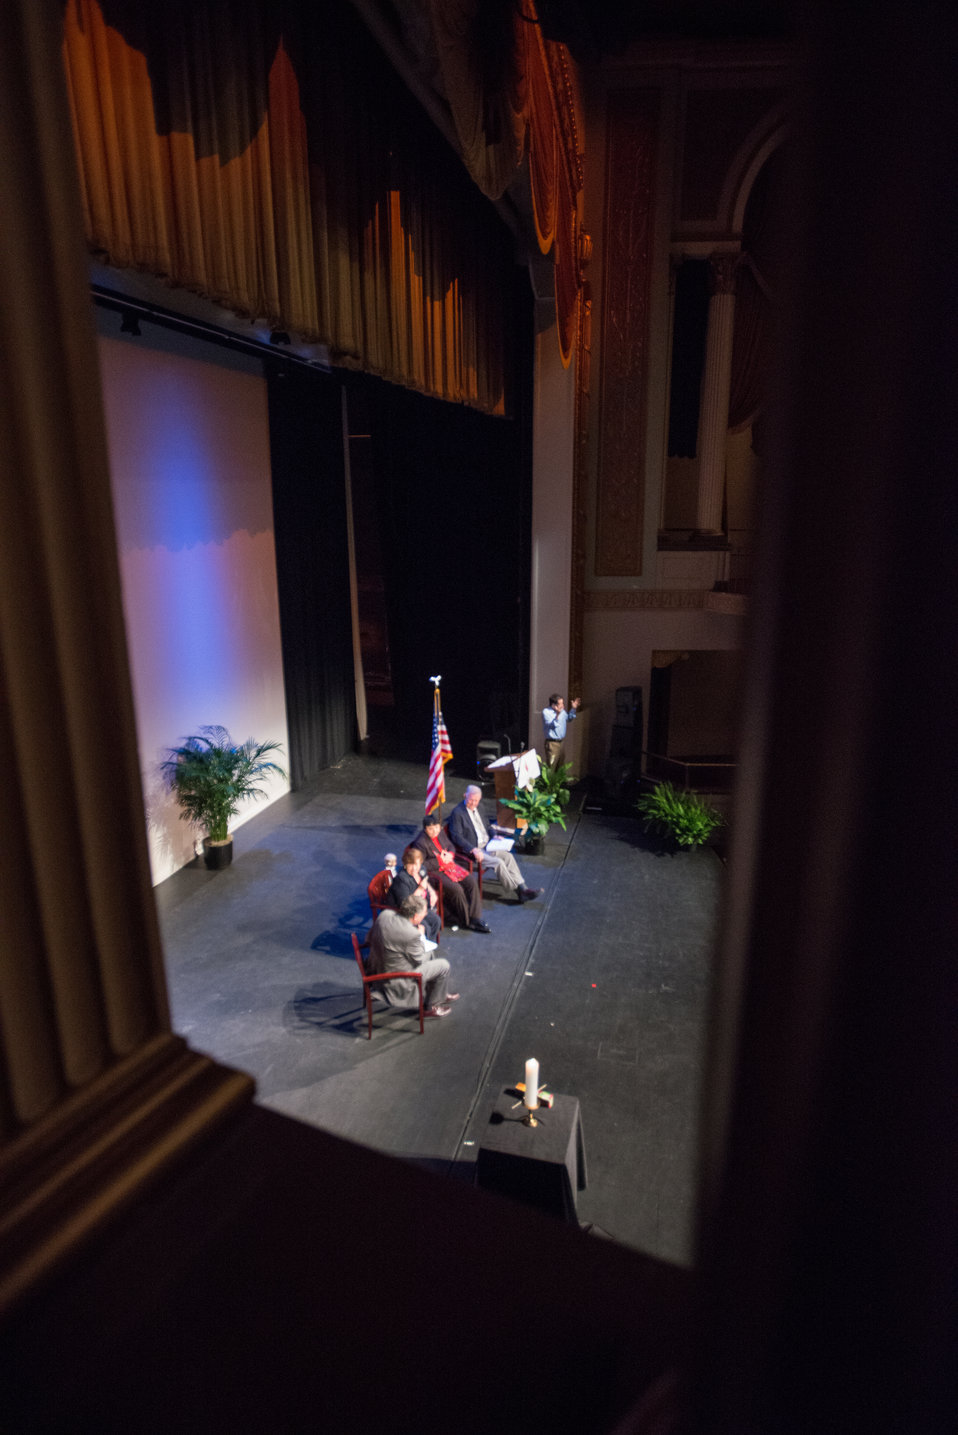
The 2013 Federal Inter-Agency Holocaust Remembrance Day, at the Lincoln Theatre, on Wednesday, April 17, 2013, in Washington, D.C. The moderator is United States Holocaust Memorial Museum Division of the Senior Historian Director Peter Black, Ph.D., at podium or seated on left, and the guest speakers, left to right, are Theresienstadt Concentration Camp Czech Jewish Holocaust Survivor Ela Stein-Weissberger, and German Jewish Holocaust Survivor Inge Auerbacher; and Dachau Concentration Camp Liberator Jimmy Gentry. Since the 1979 President’s Commission on the Holocaust, an annual proclamation signed by the President of the United States recognizes the importance of remembering the atrocities of the Holocaust that should never be forgotten or be ignored.